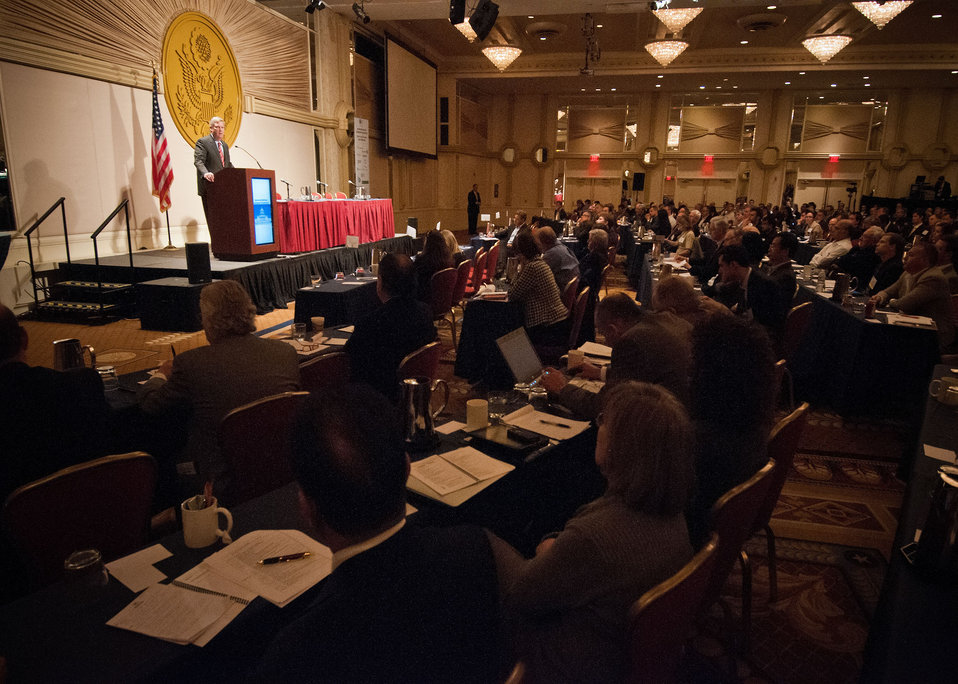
Agriculture Secretary Tom Vilsack was the keynote speaker at the Advanced Biofuels Leadership Conference to highlight the Obama Administration’s “all of the above” approach to energy in America – including renewable energy at the Capital Hilton Hotel in Washington, D.C., on Tuesday, April 3, 2012. Secretary Vilsack spoke of the economic benefits to rural America, reduced foreign oil consumption and job production. The theme of the conference was, “Go Big, Stay Strong.” As advanced biofuels move from the lab and compete for commercialization, stakeholders are strongly investing while balancing the need to stay in an uncertain policy and financial environment. At ABLC, networks are formed, relationships are developed, and decisions are made with people in a position to make a difference and those who make decisions.